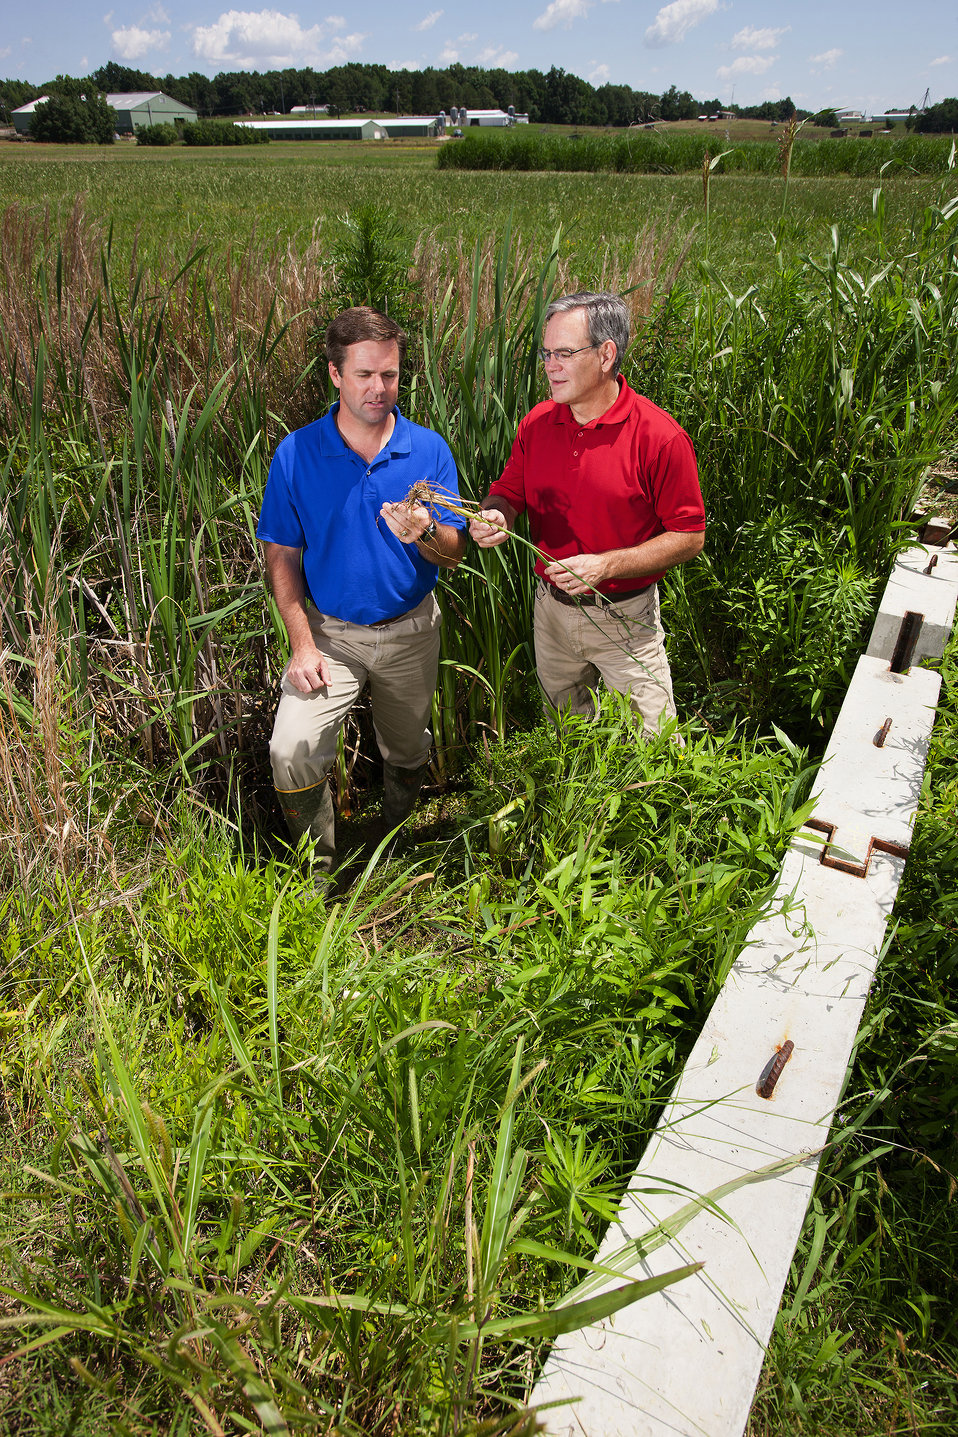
U.S. Department of Agriculture (USDA) Agricultural Research Service (ARS) ecologist Matt Moore and soil scientist Martin Locke assess the biomass of plants growing in a vegetated drainage ditch by testing to see how well the vegetated drainage ditch reduces agricultural pesticide and nutrient runoff at the ARS National Sedimentation Laboratory in Oxford, MS on Sept. 20, 2003.